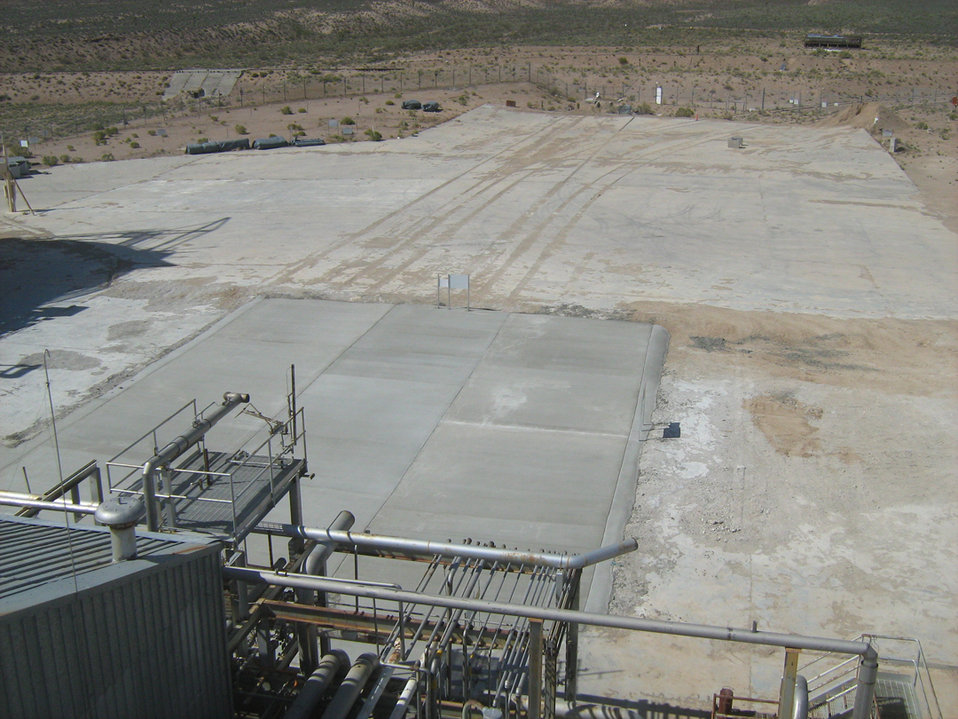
Nevada Demolition - Test Cell C 'After' photo

Crews completed demolition activities at three contaminated facilities at the NNSS. Several structures were taken down at Test Cell C, while full demolition took place at the Pluto and Reactor Maintenance, Assembly, and Disassembly facilities. Removal of these facilities will ultimately save costs associated with long-term operations, maintenance and infrastructure. This photo shows the site of the Test Cell C facility after demolition of several structures.